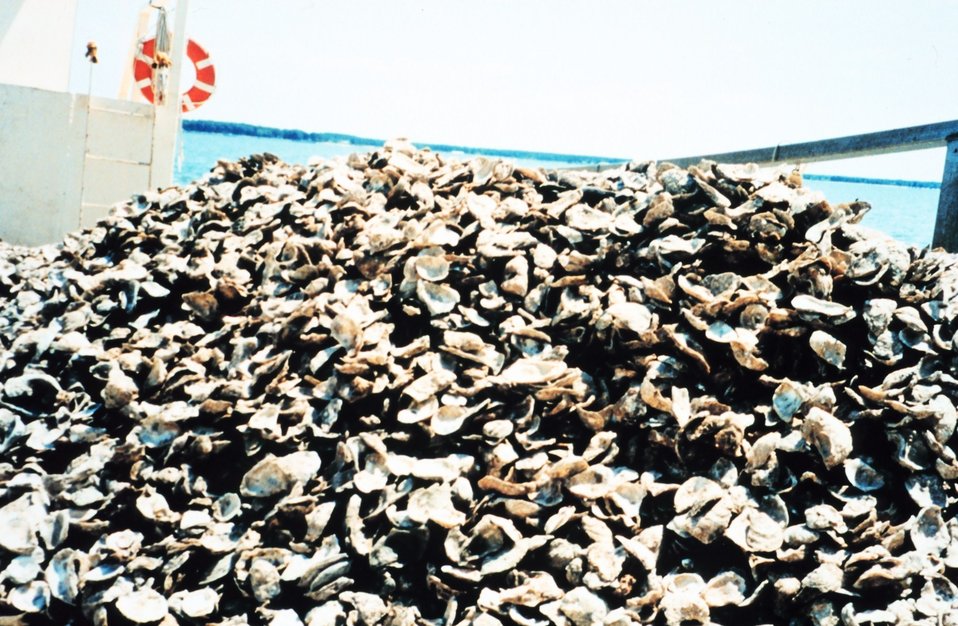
Shells containing oyster spat raised by the Oyster Recovery Partnership are piled up waiting to be moved to a permanent oyster bed off of the Severn River.